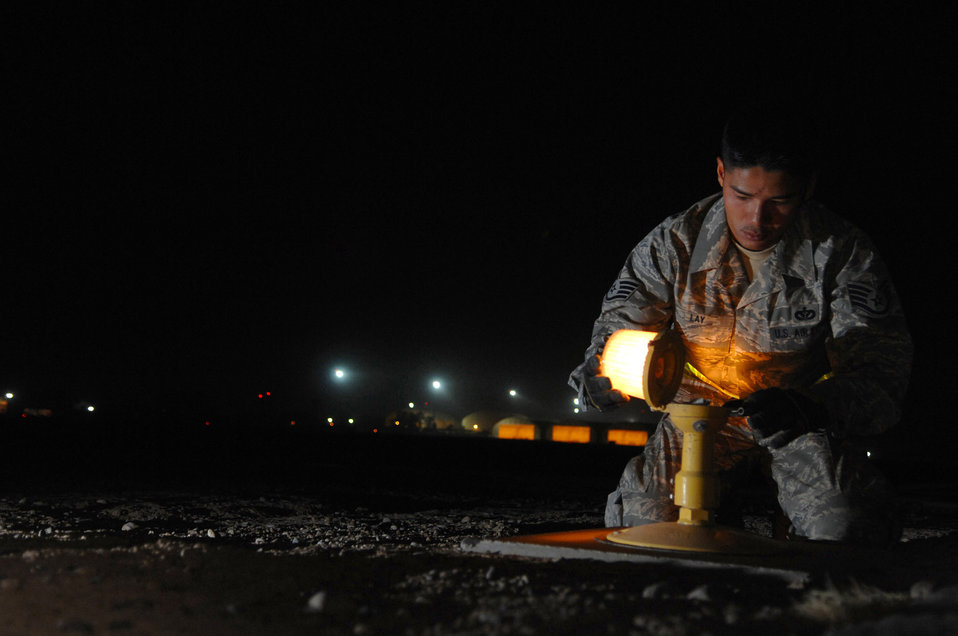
Airmen light the way

Staff Sgt. Samnang Lay replaces a bulb on a runway edge light July 5 at Joint Base Balad, Iraq. Sergeant Lay is a 332nd Expeditionary Civil Engineer Squadron electrician deployed from Ellsworth Air Force Base, S.D.